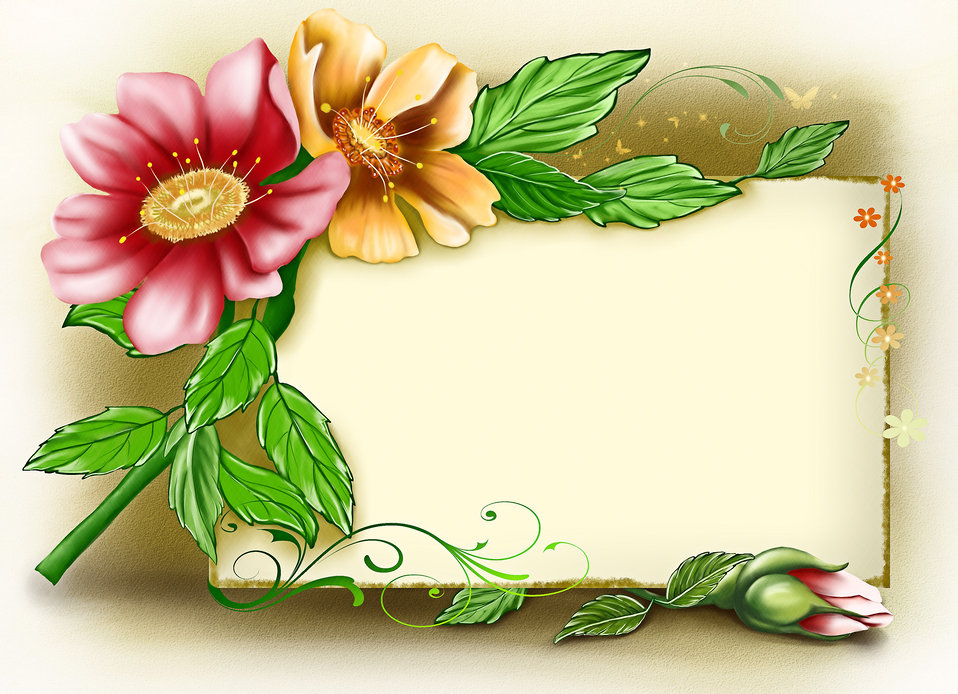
Background with flowers

Painted background with flowers. postcard..